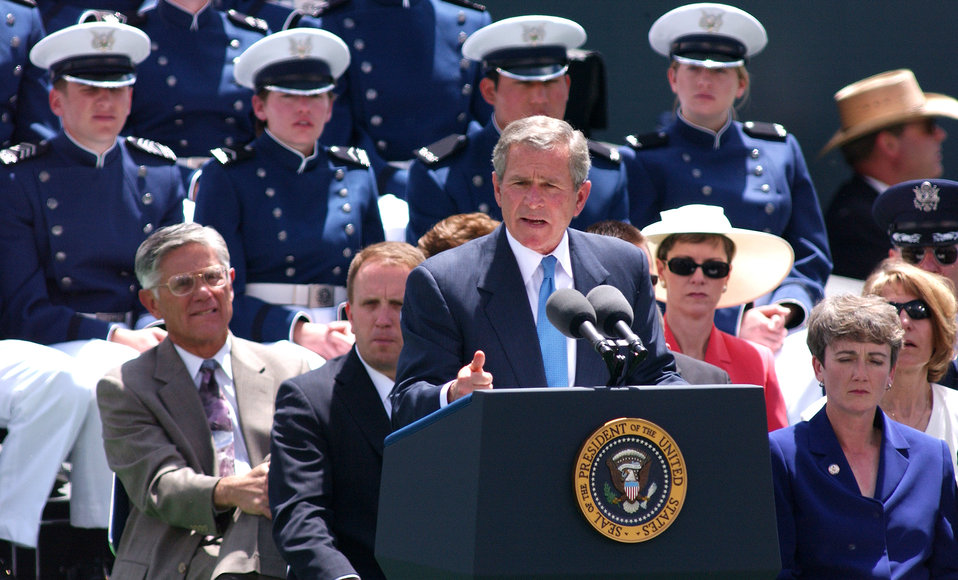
Bush speaks at graduation

U.S. AIR FORCE ACADEMY, Colo. -- President Bush speaks to graduating cadets of the Class of 2004 and about 26,000 attendees June 2 during graduation here.